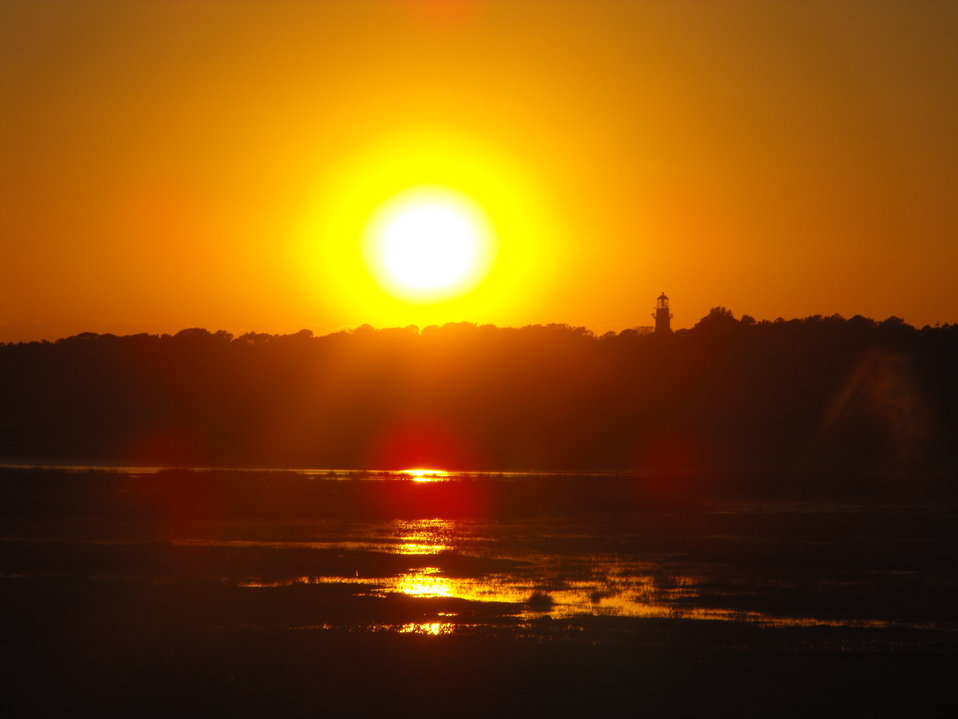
Sunset on Wildlife Loop

Sunset on the Wildlife Loop with the Assateague lighthouse in the distance at Chincoteague National Wildlife Refuge / Assateague Island National Seashore.